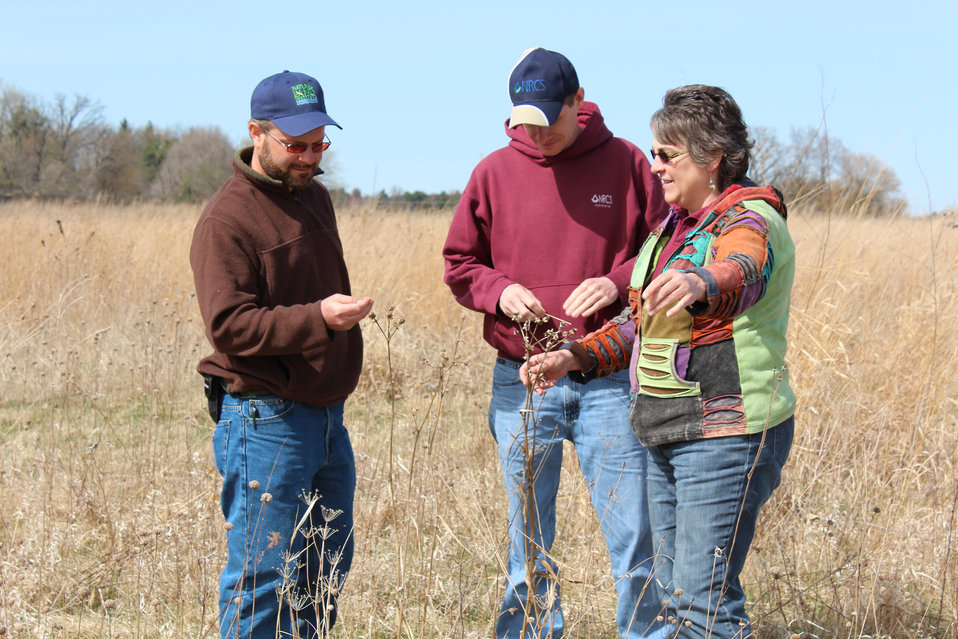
Kevin Rohling talks about the plants in the wetland with U.S. Department of Agriculture (USDA) Natural Resource Conservation Service (NRCS) district conservationist Josh Franks and USDA NRCS area biologist Ellen Starr.